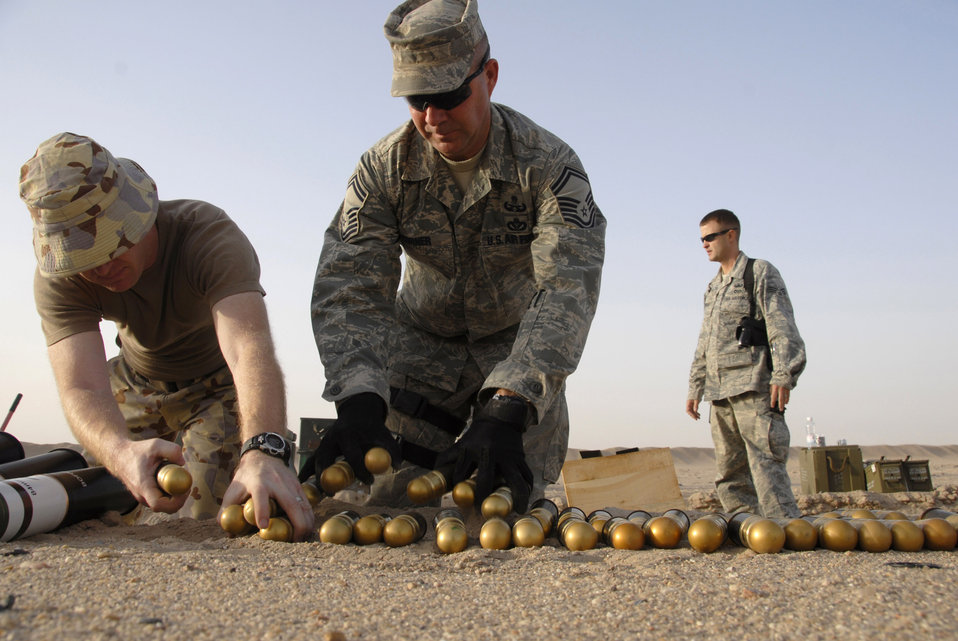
Americans, Australians go out with a bang

Australian army ammunition technician Warrant Officer Class Two Neil Snape (from left to right), Senior Master Sgt. Russell Corner and Senior Airman Charles Howell help move 40 millimeter high explosive dual purpose rifle grenades for disposal in preparation for a controlled detonation June 20 at an explosive ordnance disposal range in Southwest Asia. The joint detonation also provided an opportunity for the U.S. and coalition forces to enhance their relations while learning some of the slight differences in operating procedures. Sergeant Corner and Airman Howell are from the 386th Expeditionary Civil Engineer Squadron Explosive Ordnance Disposal Flight.